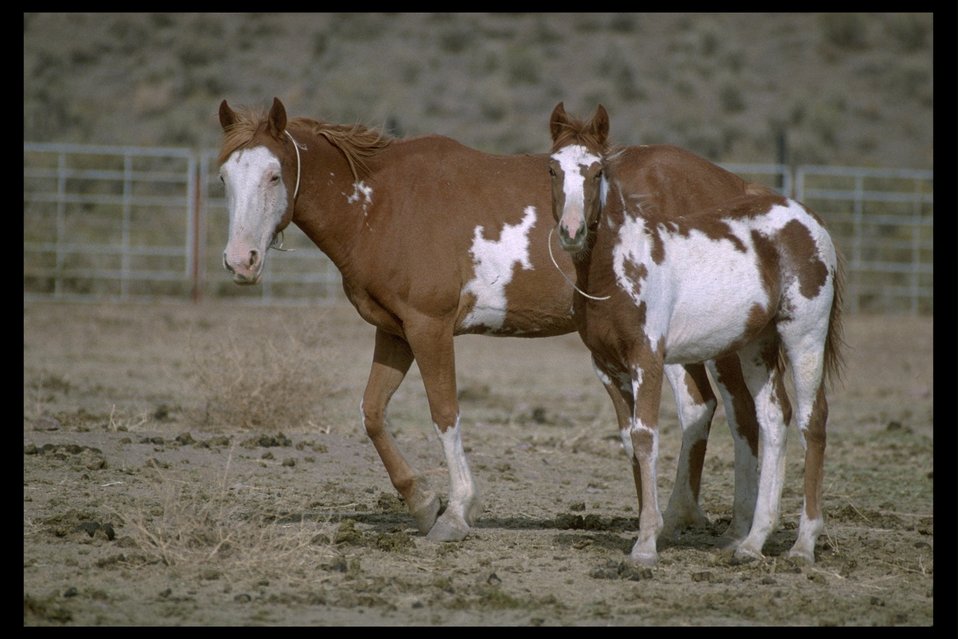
Pair of colorful Pinto wild horses await adoption at the Burns Wild Horse Corral in the South Steens HMA.